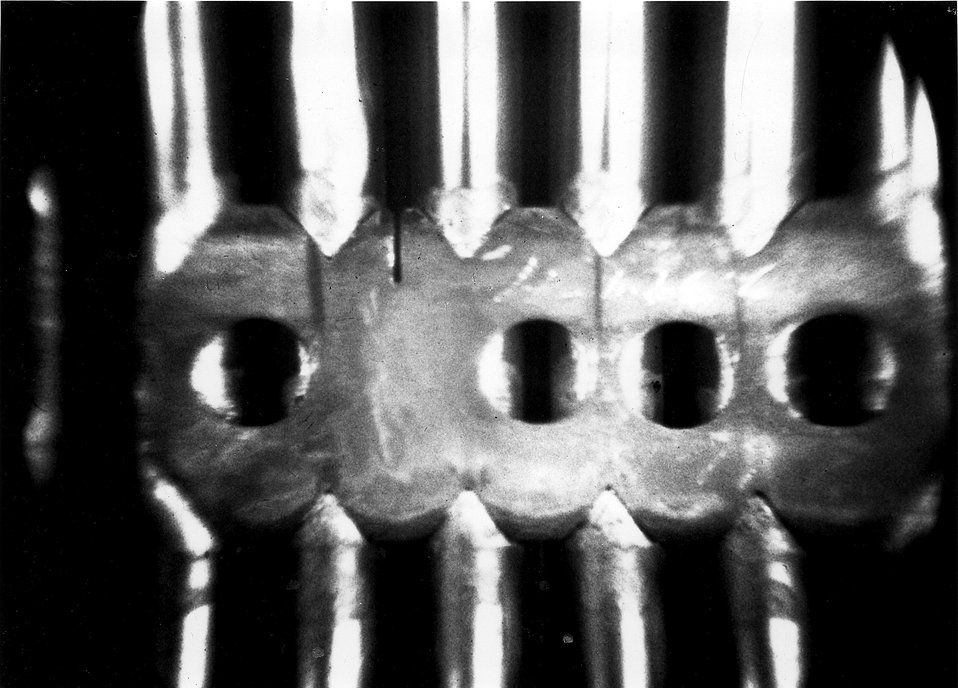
This underwater photograph of a 'spent' fuel element in the Yankee Nuclear Power Station shows the excellent condition of the fuel tubes and brazing. c. undated